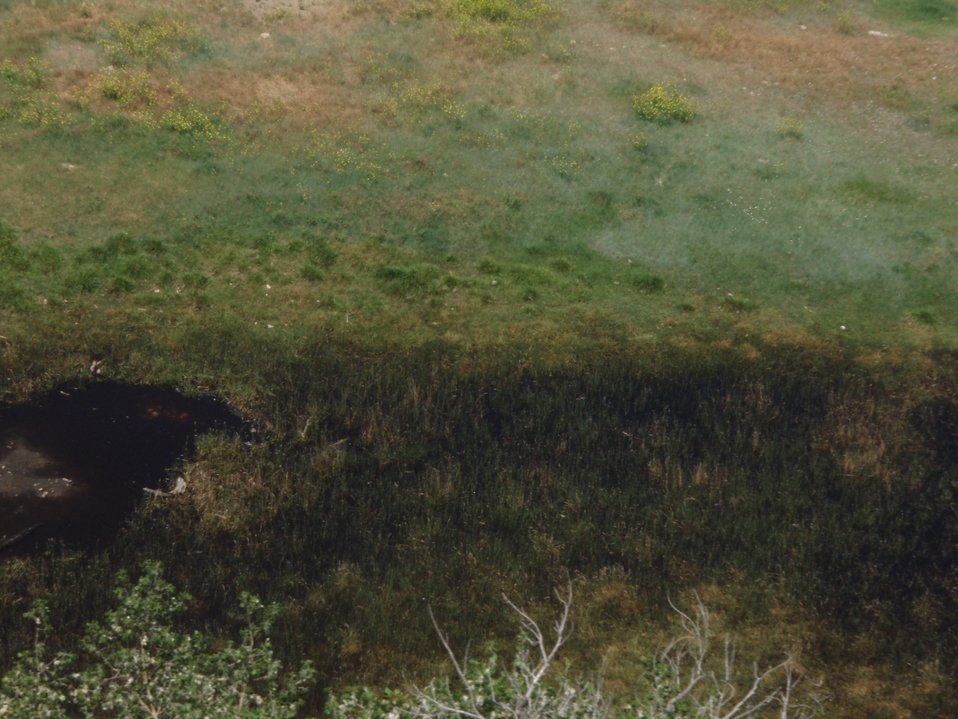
Aerial Wildlife Survey

U.S. Fish and Wildlife Service Environmental Contaminants Specialists regularly fly over the Silvertip Oil Spill to spot potentially oiled wildlife by looking for signs of distress. The locations of spotted wildlife are provided to avian specialists of International Bird Rescue (IBR) so that they may attempt capturing the affected wildlife. Additionally, the spotters note the oiled areas that intersect with prime habitat for species of concern. These areas are provided to IBR specialists for them to inspect by ground or water, weather permitting. Photo taken on July 9, 2011.